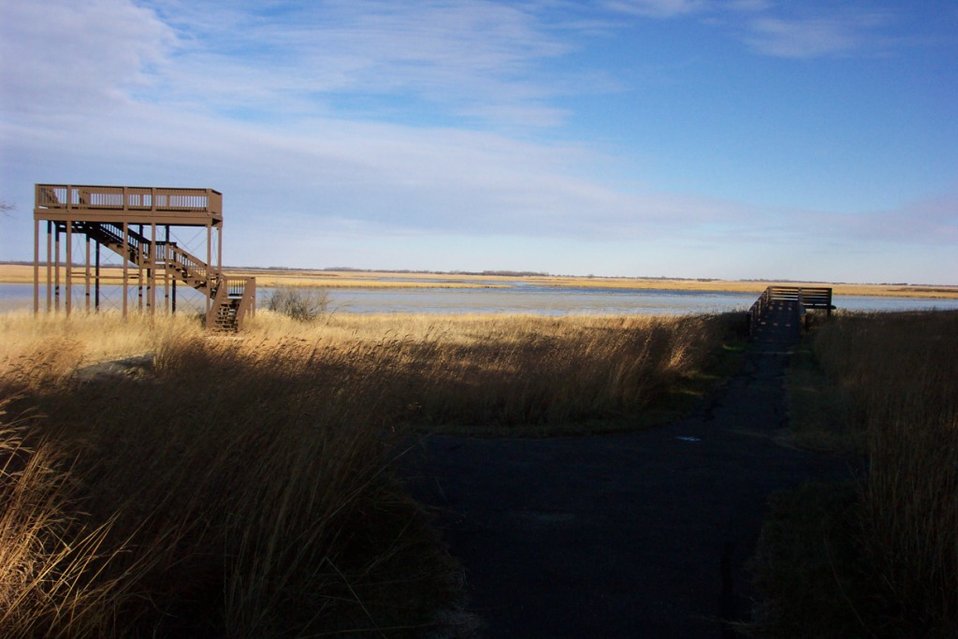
Headquarters Lookout

Lookout at J. Clark Salyer National Wildlife Refuge in North Dakota.